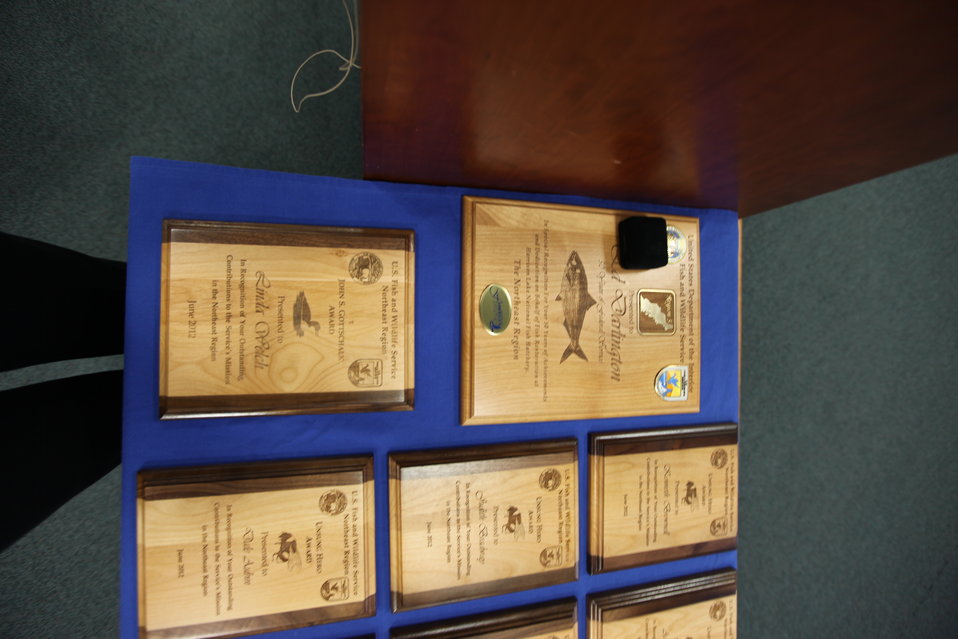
Northeast Region Employee Appreciation Awards